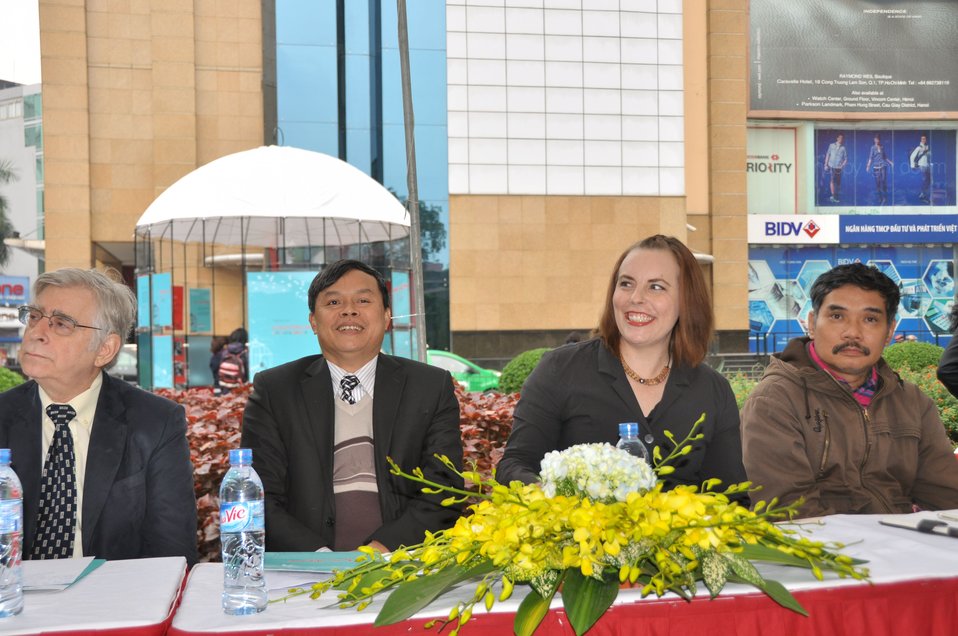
Speakers help launch the exhibition

USAID/Vietnam